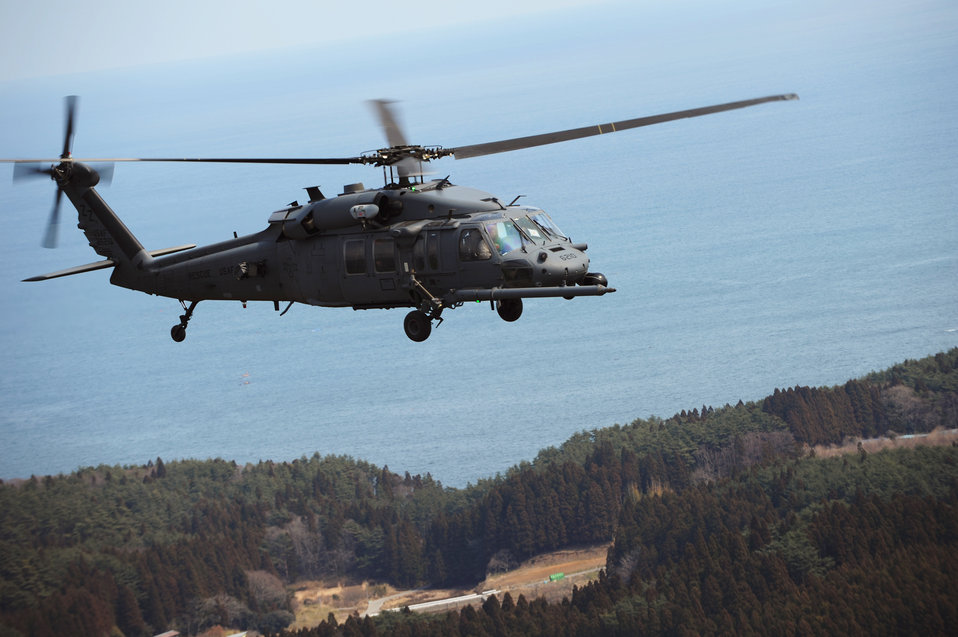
Rescue team mission

Rescue team members in an HH-60 Pave Hawk conduct search operations over Japan, March 25, 2011, in support of Operation Tomodachi.